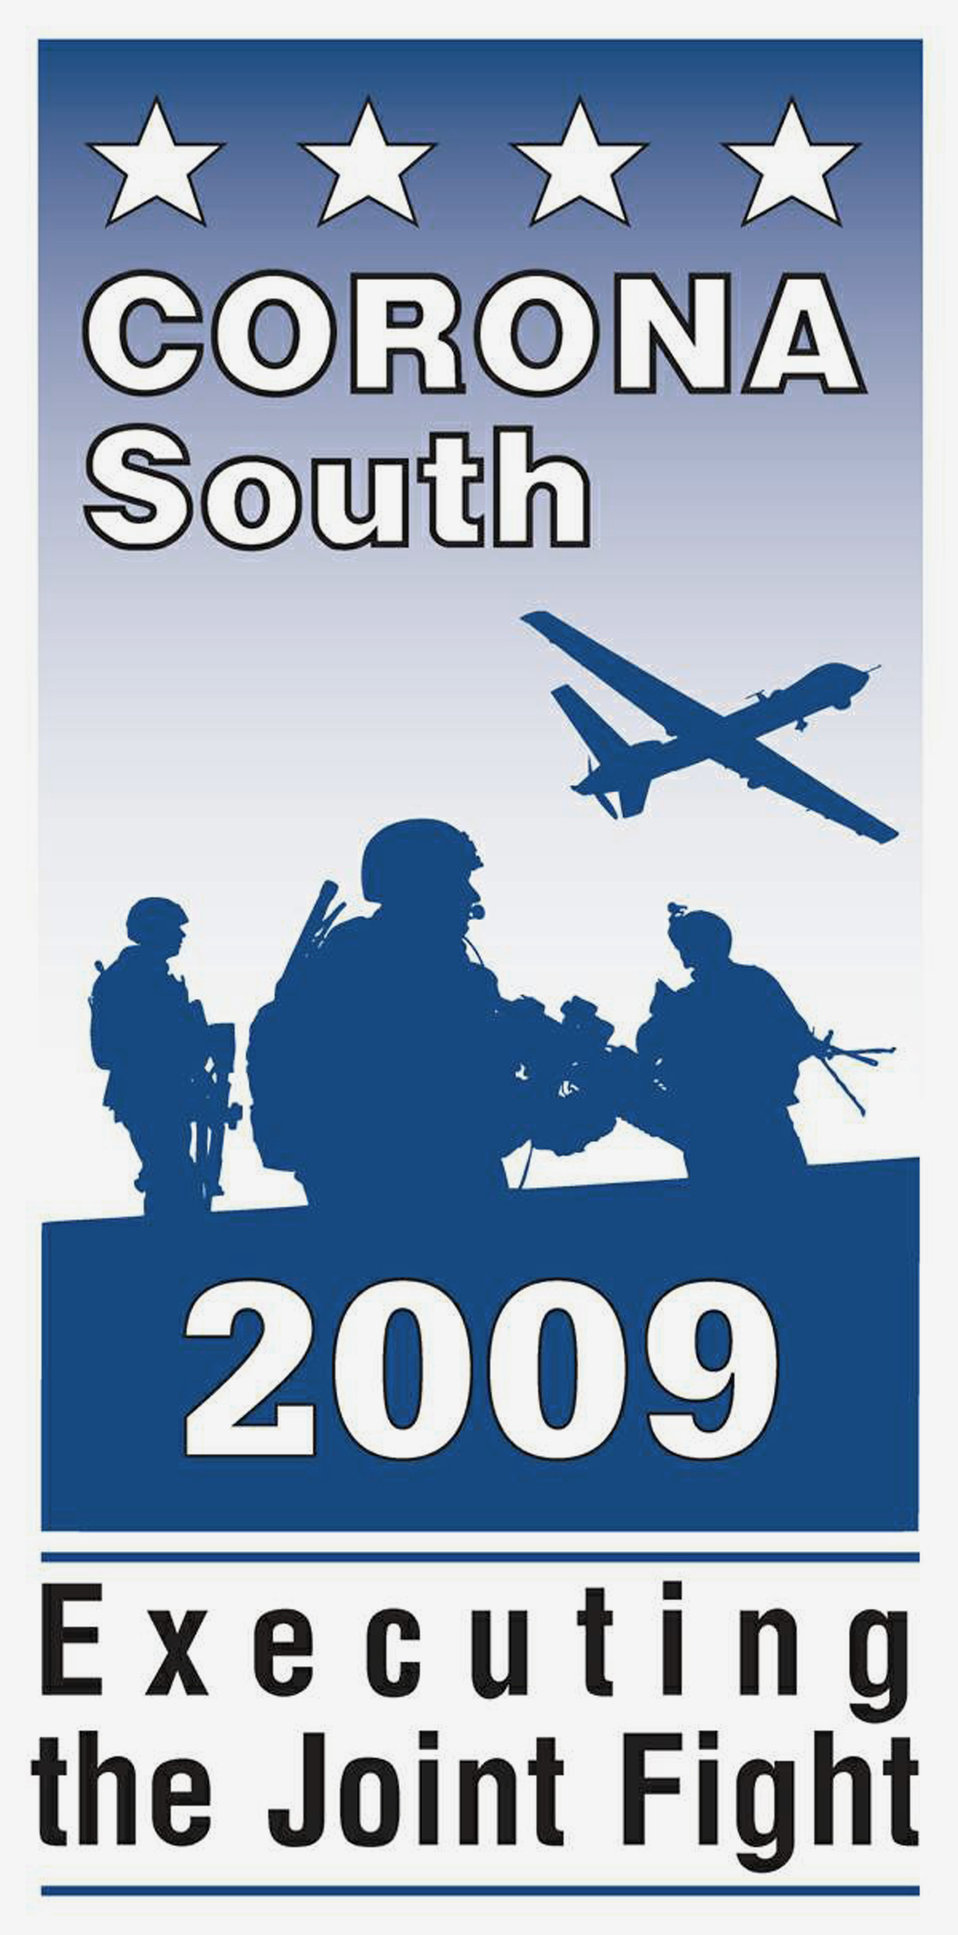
Leaders discuss top Air Force issues at Corona South

Air Force senior leaders discussed key issues facing the service to advance discussion or make decisions on challenges facing the Air Force during Corona South March 27 and 28 at Bolling Air Force Base, D.C.